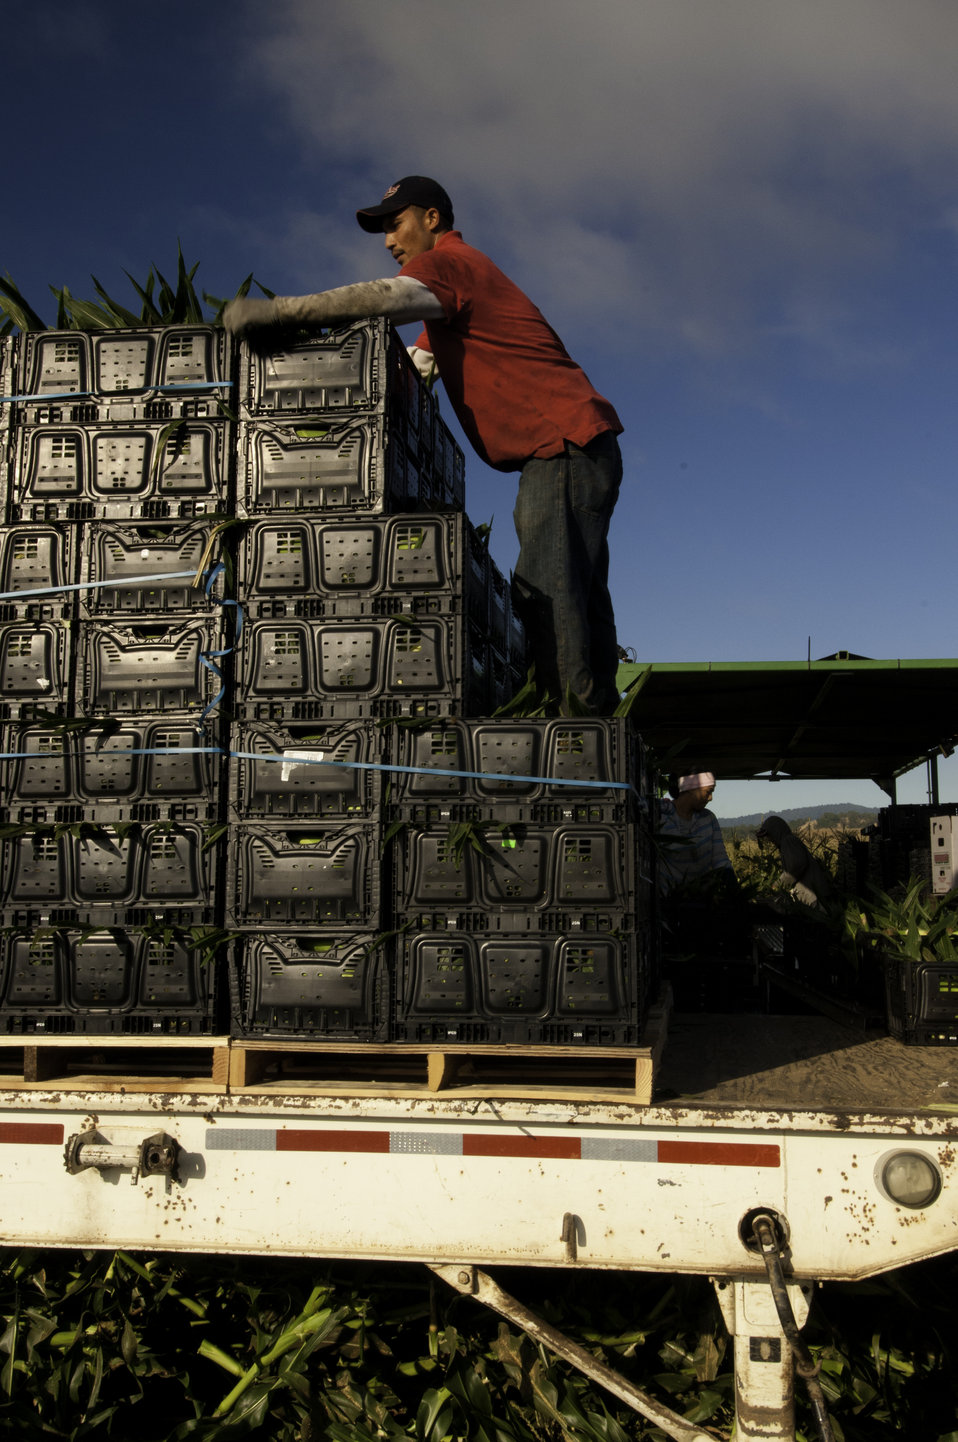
Migrant workers harvest corn on Uesugi Farms in Gilroy, CA on Wednesday, Aug. 28, 2013.